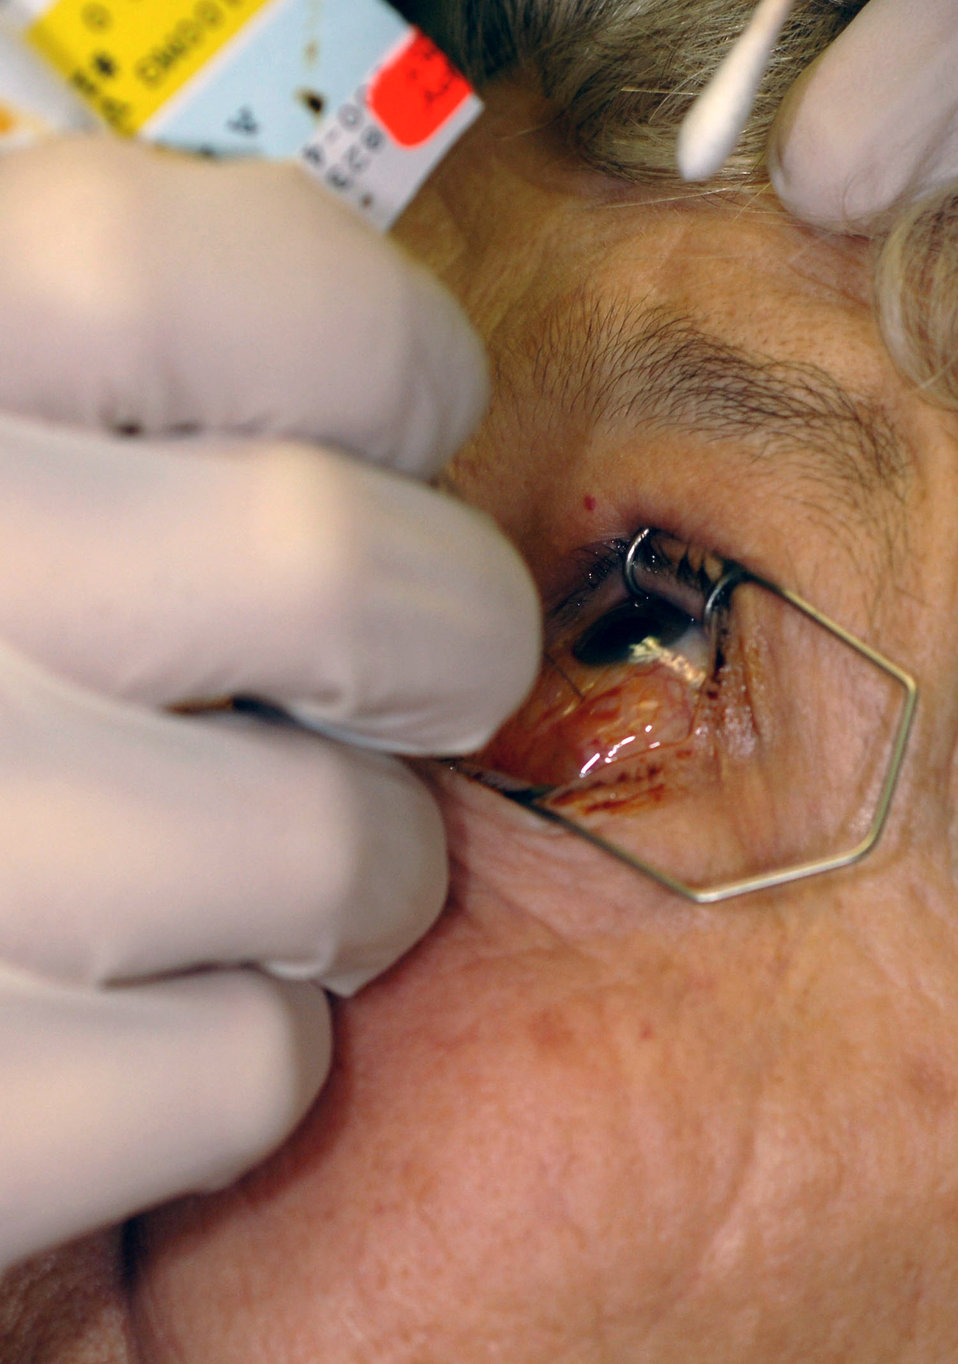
New eye treatment offers better outcome, saves money

Betty Disler receives an injection in her left eye Dec 11at the Wilford Hall Medical Center Ophthalmology Clinic. The medication prevents macular degeneration, a disorder that affects central vision.